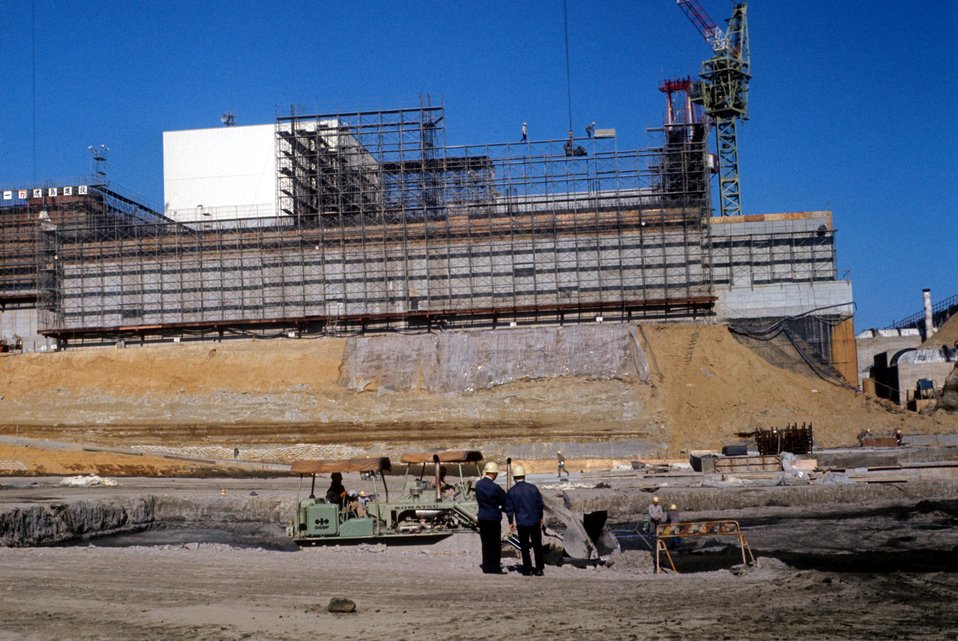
Tepco Nuclear Plant, Fukushina, Japan. c. 1970